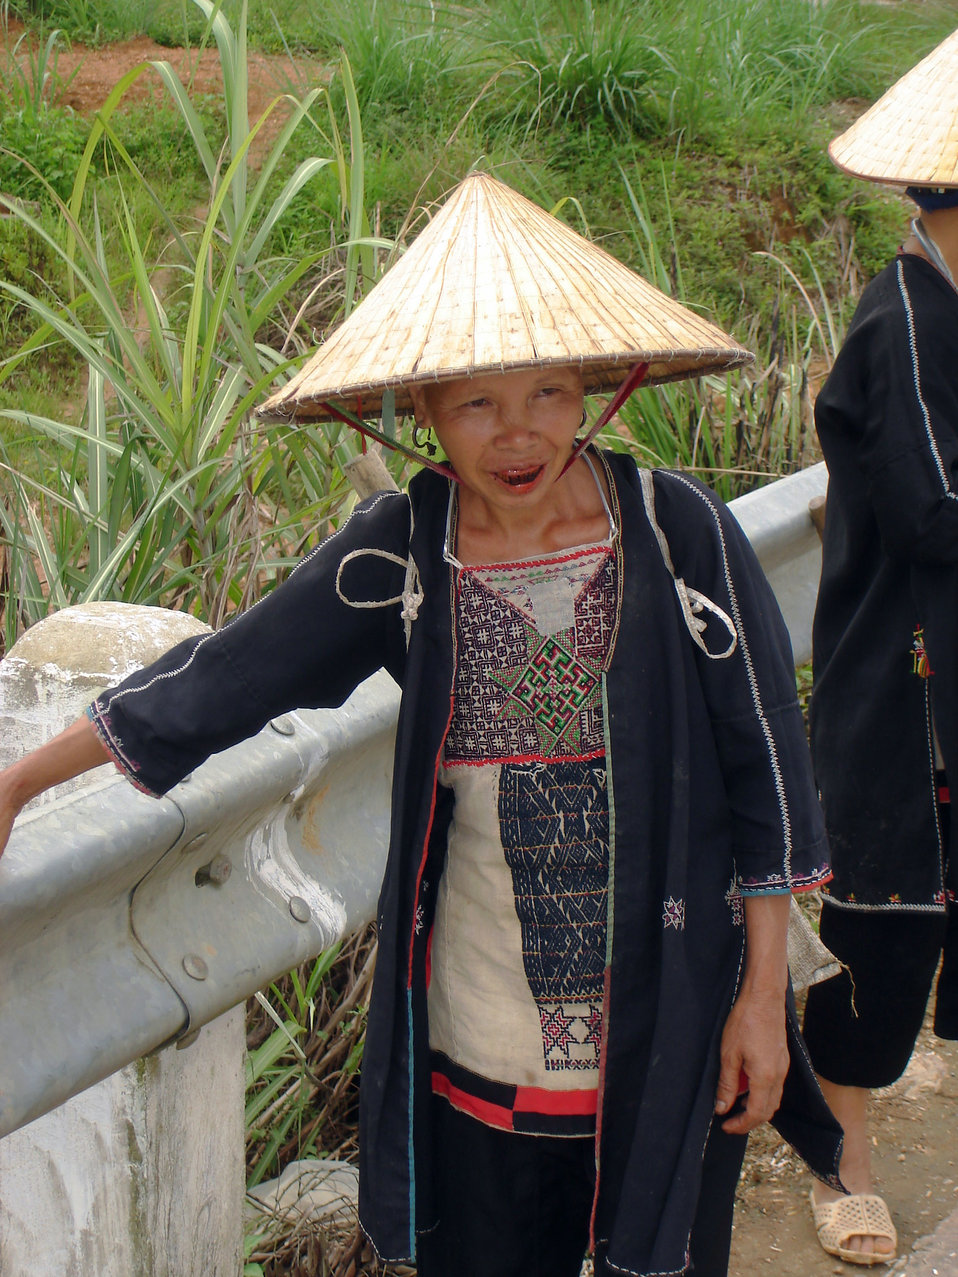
Deutsch: Eine Weisse Dao (Yao) mit geschwärzten Zähnen (Nord-Vietnam)